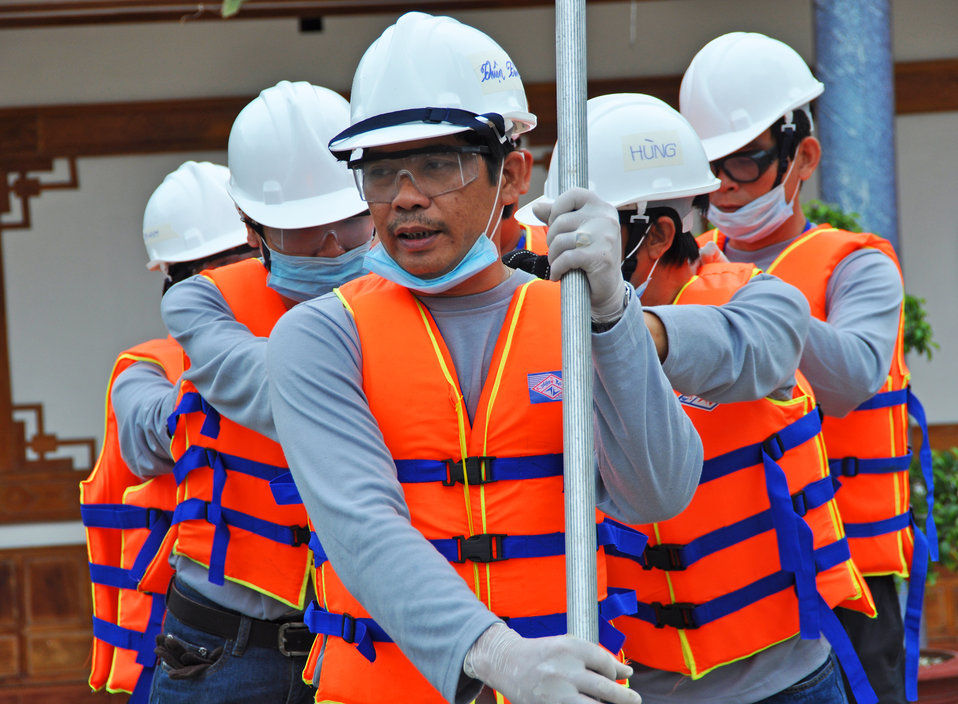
Disaster and Emergency Training Funded by USAID in Hue, Vietnam